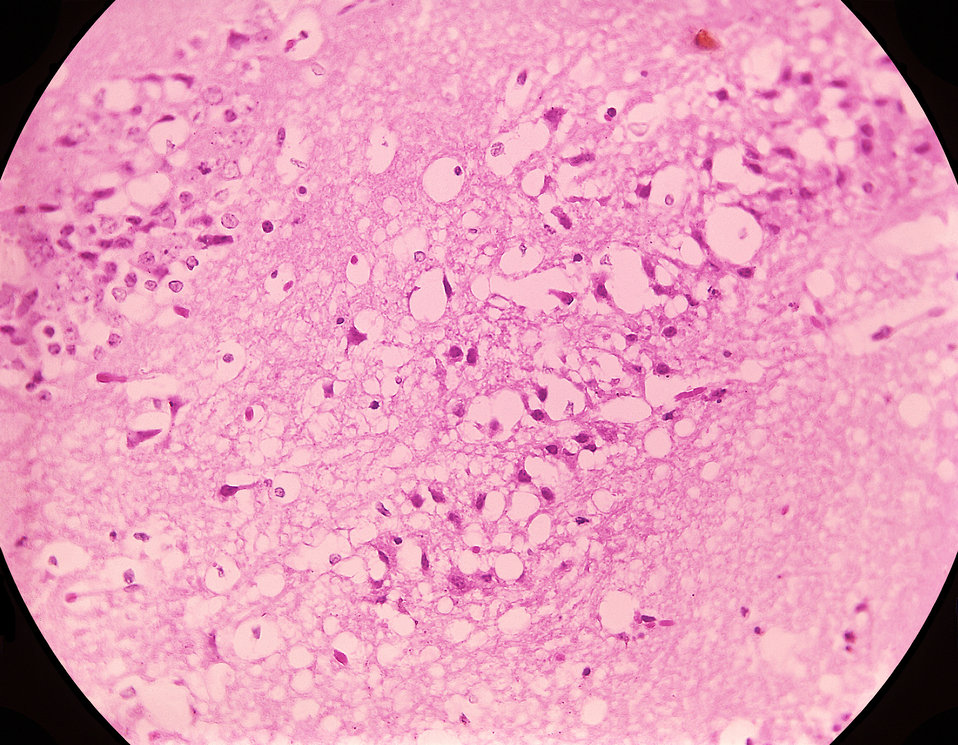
Magnified 300X, this photomicrograph of mouse brain tissue after dying of Venezuelan Encephalitis, reveals neural necrosis and edema.